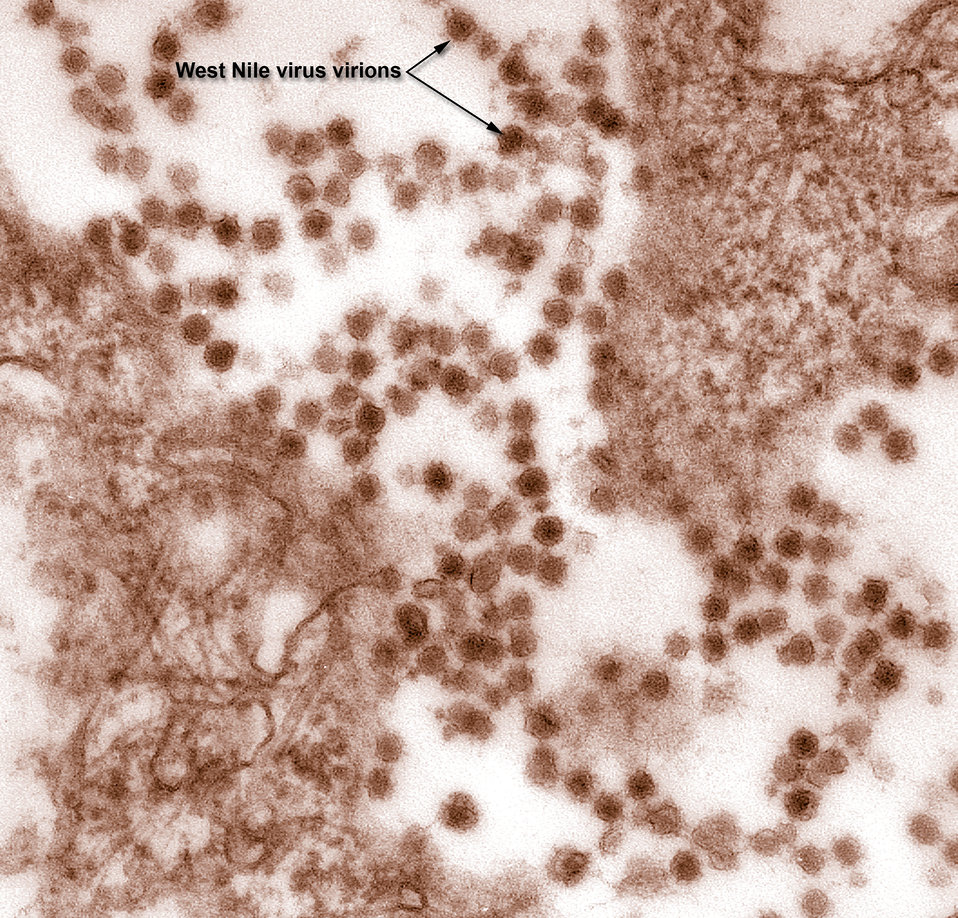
This transmission electron micrograph (TEM) revealed the presence of West Nile virus virions, in an isolate that was grown in a cell culture.What Is West Nile Virus?